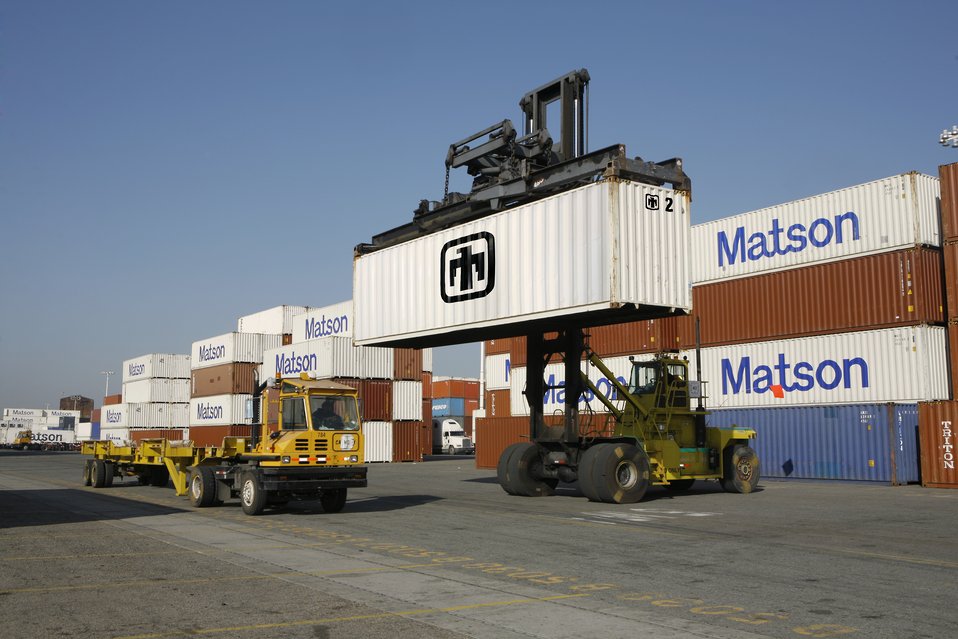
One of Sandia's containers is moved in preparation for loading at the Port of Oakland.

Sandia is assisting Department of Homeland Security in developing an open standard that specifies security requirements, operational procedures, and communications protocols that allow for continuous monitoring of cargo container integrity and automated integrity checking of containers at key points in shipping process. The standards being developed will allow for the creation of flexible container security components that can be integrated with exiting maritime containers and truck trailers, and be tailored to operational concepts of individual organizations.